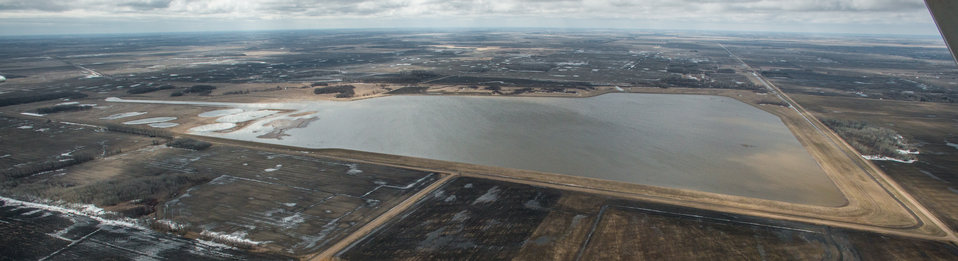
Snake River Watershed Off Channel Storage Site, east of Warren, MN, Wednesday, May 1, 2013. For information about this and other programs from the USDA Red River Basin Initiative (RRBI) please see www.mn.nrcs.usda.gov/news/features13/RRBI.html.